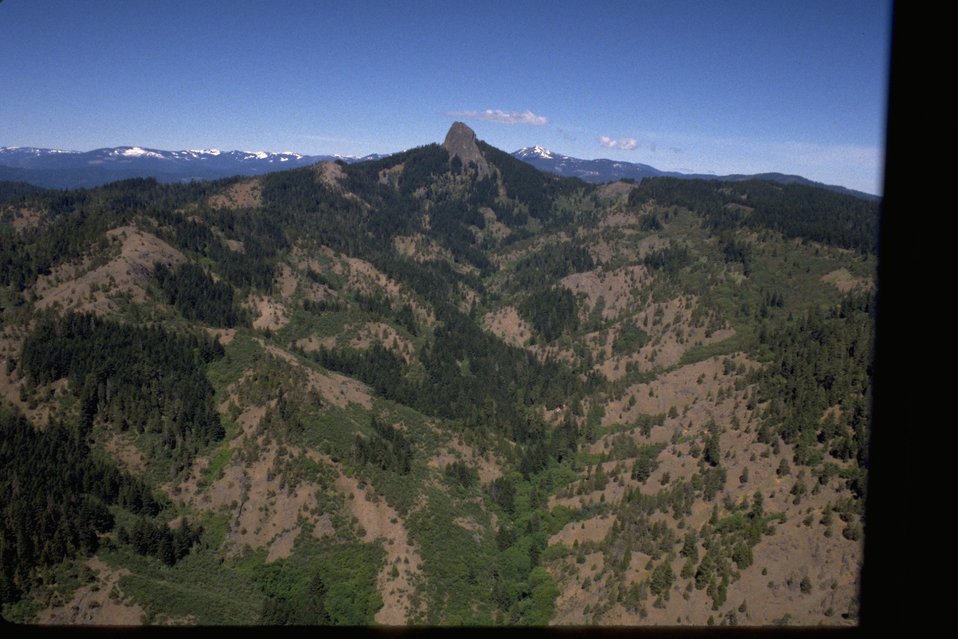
Upper Slide Creek with Pilot Rock in the background.